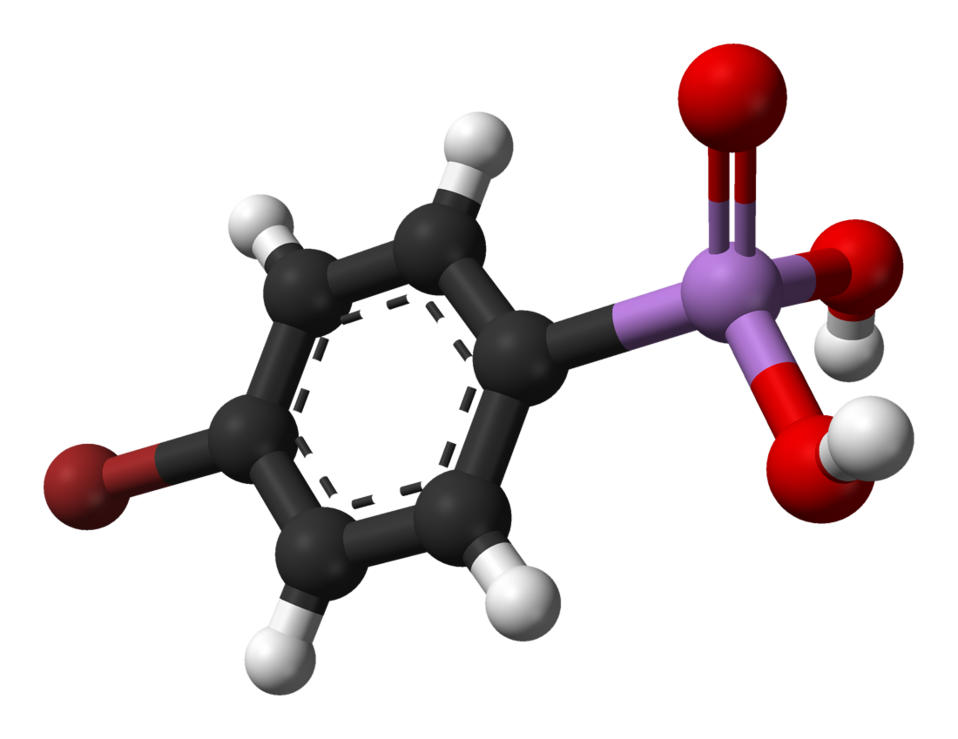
Ball-and-stick model of the (4-bromophenyl)arsonic acid molecule, as found in the crystalline state. X-ray crystallographic data from R. Betz, P. Klüfers and A. Walter (October 2007). '(4-Bromophenyl)arsonic acid'. Acta Cryst. E63 (10): m2483. DOI:10.1107/S1600536807043140.. Model constructed in CrystalMaker 8.1. Image generated in Accelrys DS Visualizer.